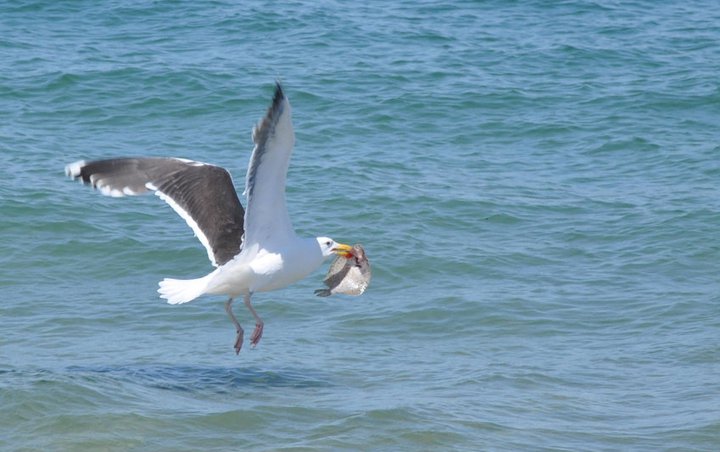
Great Black-Backed Gull with Flounder

A great black-backed gull with a flounder in its beak at the Nantucket National Wildlife Refuge, MA.